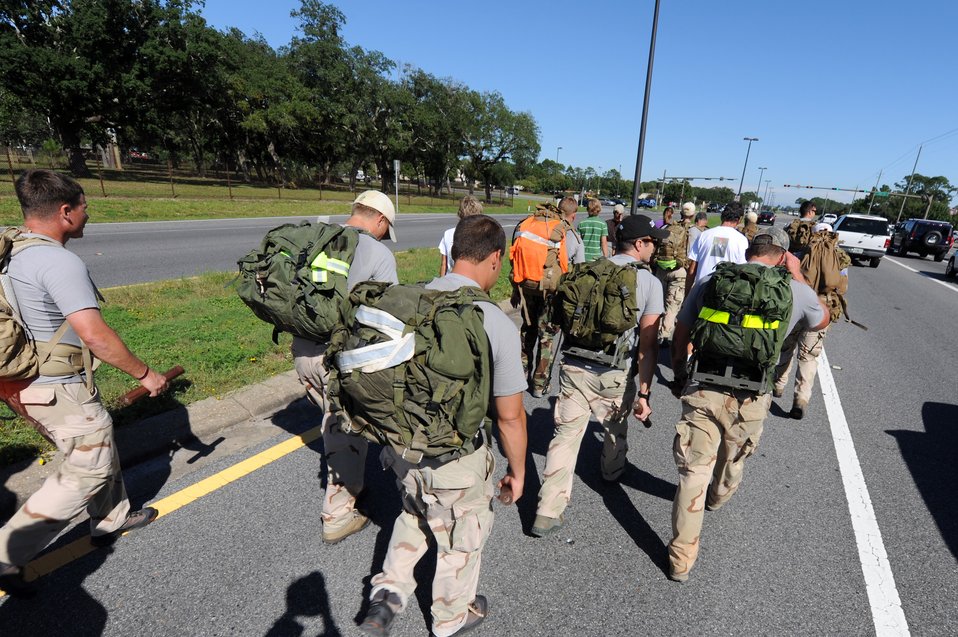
Warrior walk

Twelve Airmen complete their last leg of a memorial ruck sack march through Ft. Walton Beach, Fla. to Hurlburt Field, Oct. 16, 2009, to honor 12 fallen special tactics teammates killed in Iraq and Afghanistan. The march began Oct. 6, 2009, at Lackland Air Force Base, Texas, and encompassed more than 800 miles and five states.